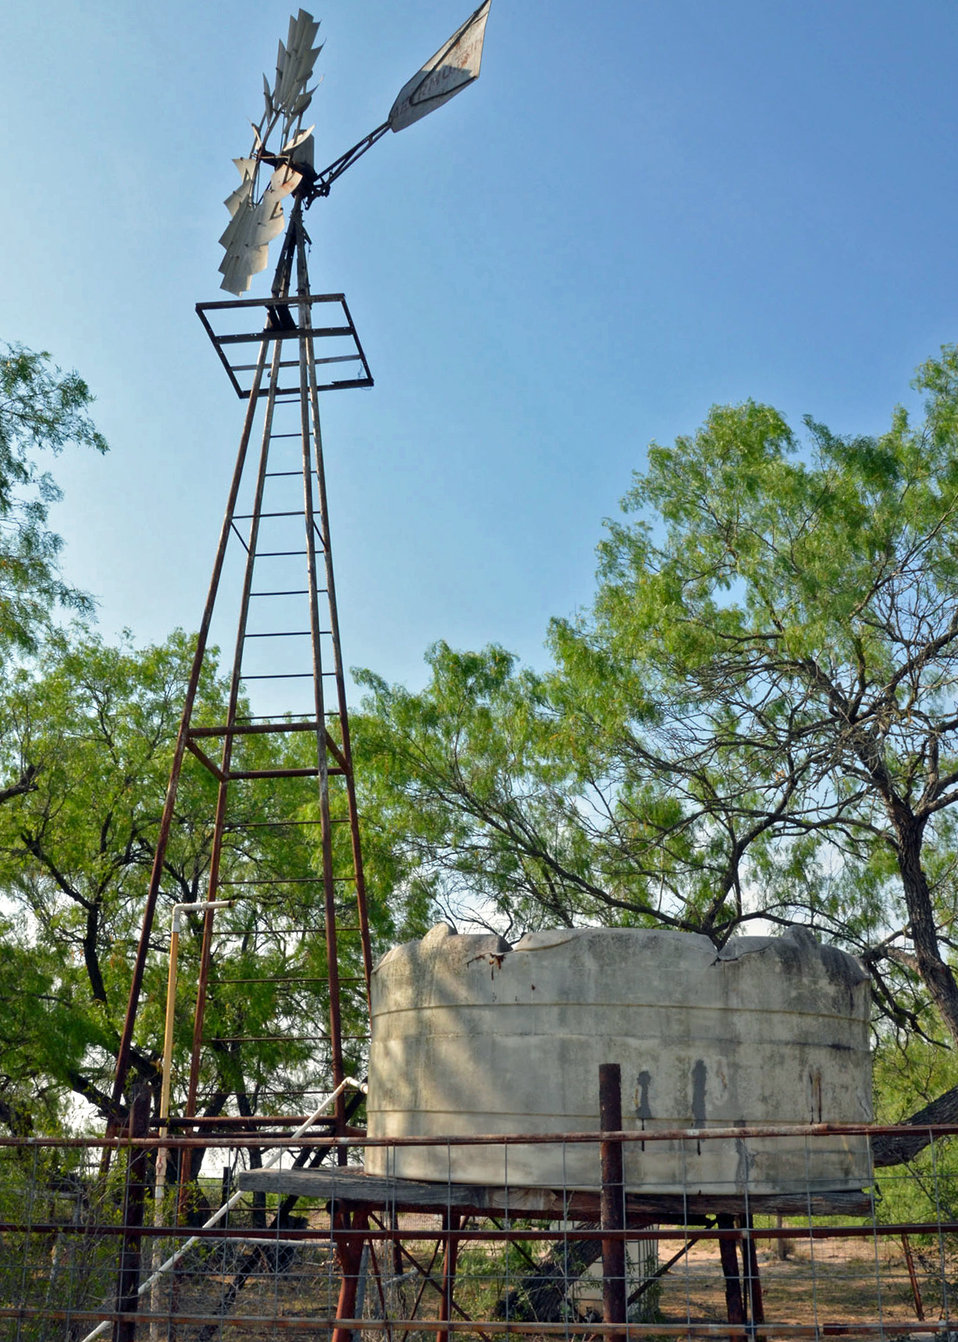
A windmill-powered water well dug in the 1930s along with the livestock watering tank that the well fed. The well has run dry due to decades of drought cycles.